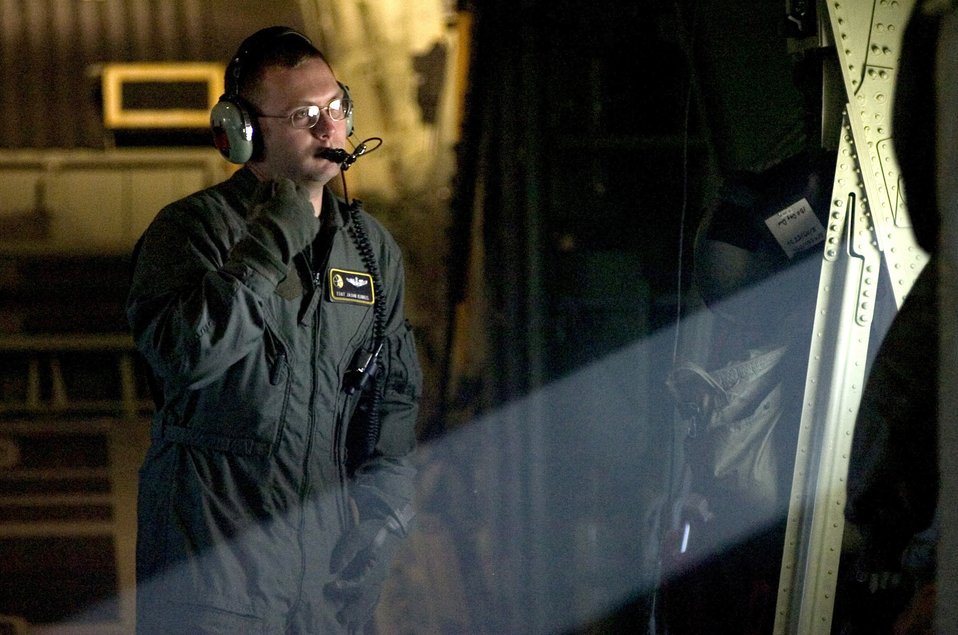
Joint Readiness Training Exercise

LITTLE ROCK AIR FORCE BASE, Ark. (AFPN) -- Tech Sgt. Jason Kunkel pauses during a preflight inspection. Sergeant Kunkel conducted troop and equipment onload and offload operations as well as a combat delivery system airdrops during a Joint Readiness Training Center exercise. Sergeant Kunkel is a loadmaster with the 48th Airlift Squadron.